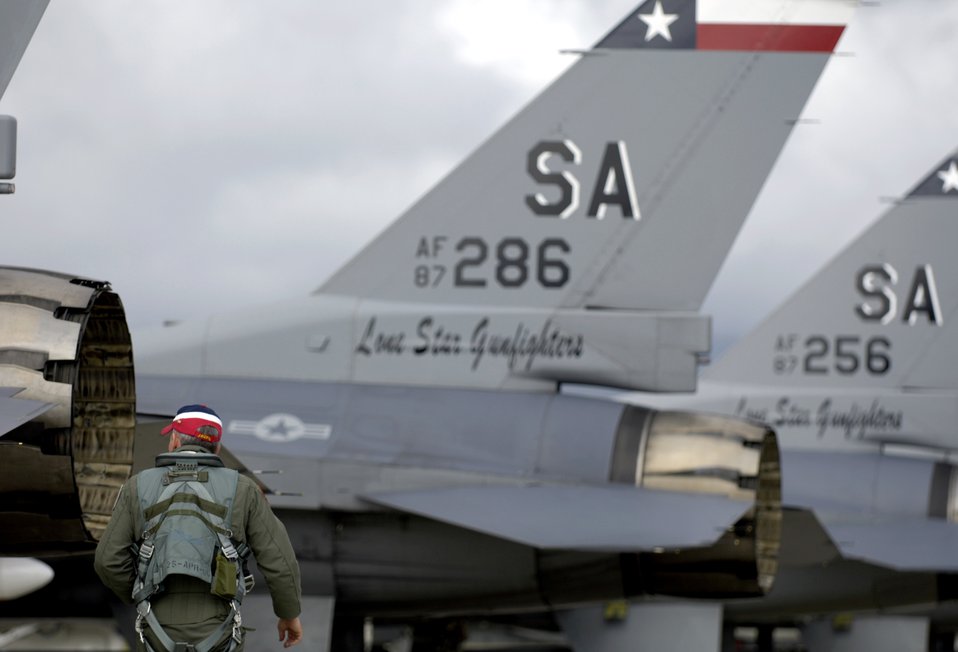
Sentry Aloha

Lt. Col. John Kane conducts a post-flight check on his F-16 Fighting Falcon after arriving at Hickam Air Force Base, Hawaii, Sept. 6 to participate in Exercise Sentry Aloha. Colonel Kane is a pilot with the Texas Air National Guard's 149th Fighter Wing. The exercise brings dissimilar combat assets to Hickam to train with the Hawaii Air National Guard's 199th Fighter Squadron.